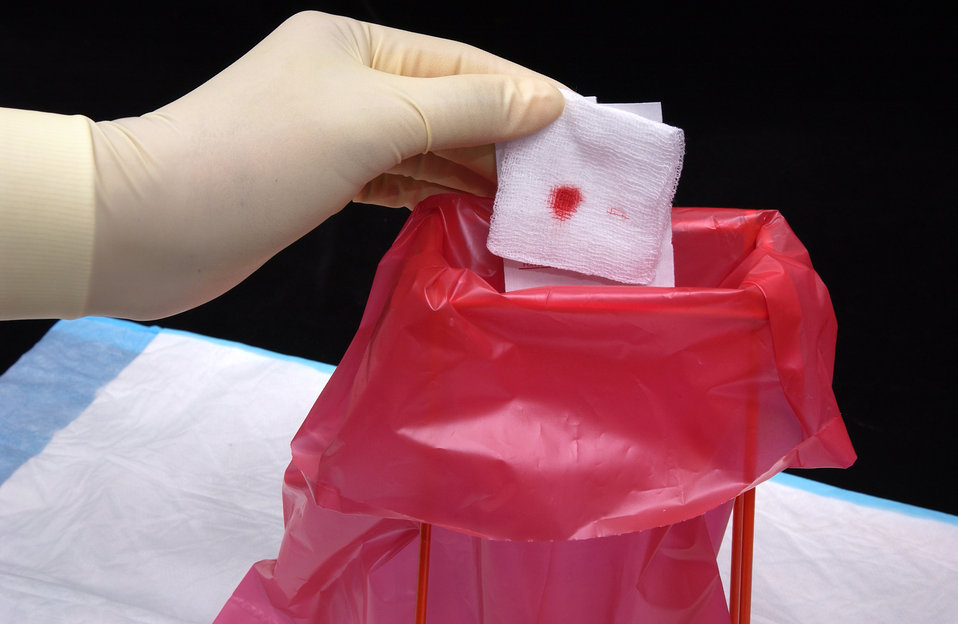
This image depicts a trained phlebotomist, i.e., a technician skilled in the practice of drawing blood from a patient, who was appropriately disposing materials used in performing a venipuncture procedure. This image is the nineteenth in a series of 19 images outlining the steps involved in extracting blood during the venipuncture process.